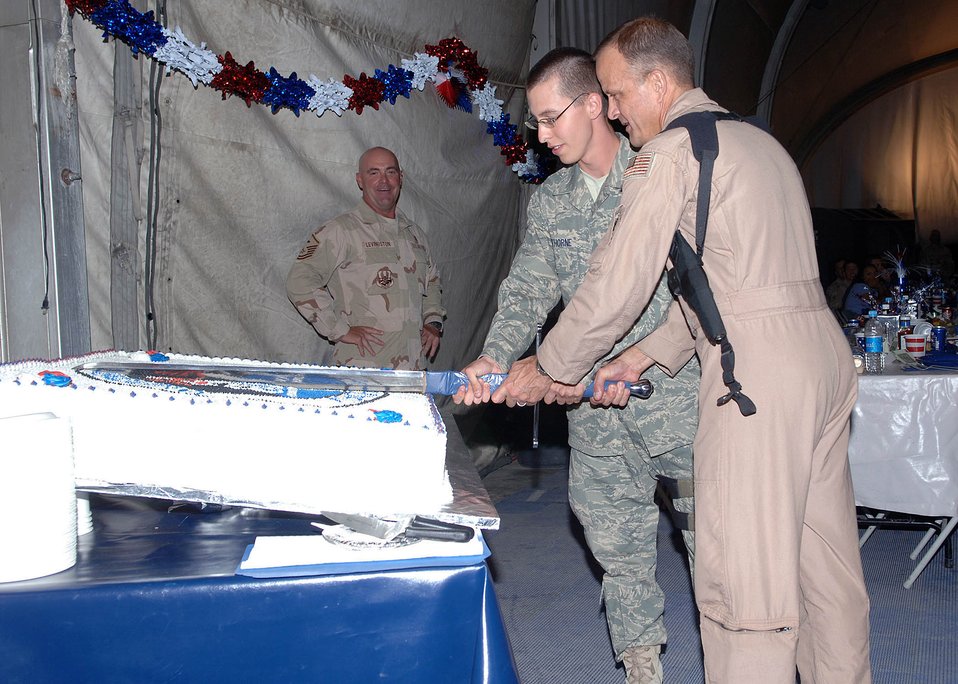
Bagram Airmen celebrate Air Force's 60th birthday

Maj. Gen. Kevin J. Kennedy and a young Airman ceremoniously cut the cake representing both the most senior and most junior Airman in attendance for the Air Force 60th Anniversary Ball Sept. 8 at Bagram Air Base, Afghanistan. General Kennedy is the director of the Air Component Coordination Element from Kabul, Afghanistan.